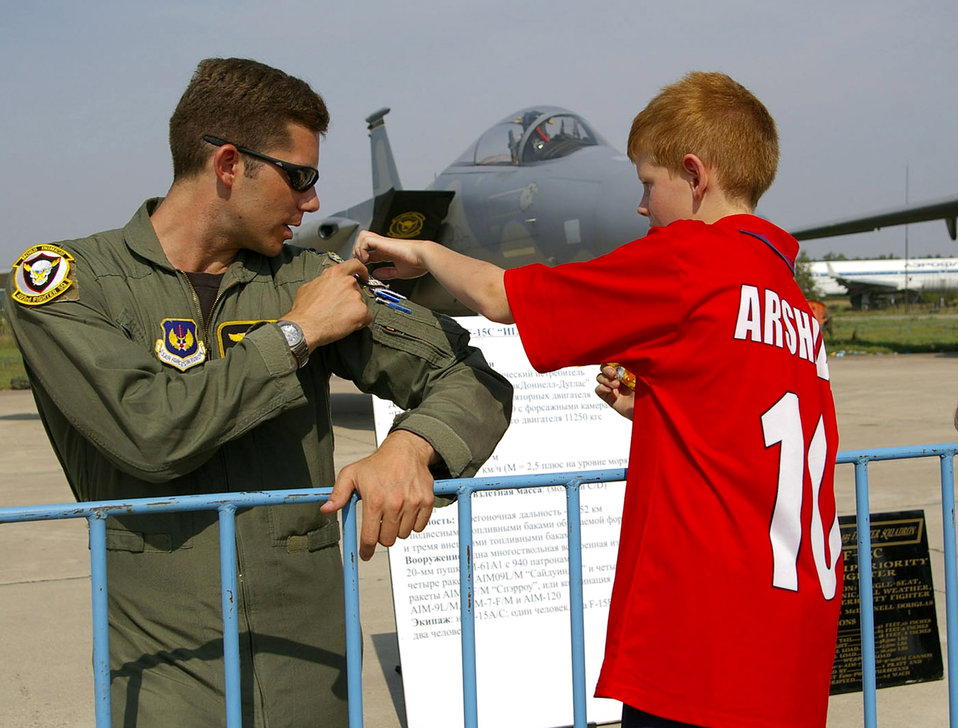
Airmen in Moscow reach out to children

Capt. Brian Marbach tells a young Russian boy about his Air Force patches at the Moscow International Air Show Aug. 24 in Zhukovsky, Russia. About 65 Airmen from bases in Europe and the states participated in this year's air show. Captain Marbach is assigned to the 493rd Fighter Squadron at Royal Air Force Lakenheath, England. RAF Lakenheath had three F-15 Eagles at Moscow's air show -- one on static display, one being flown by the F-15 West Demonstration Team from Eglin Air Force Base, Fla., and one as back-up to the flying demonstration plane.